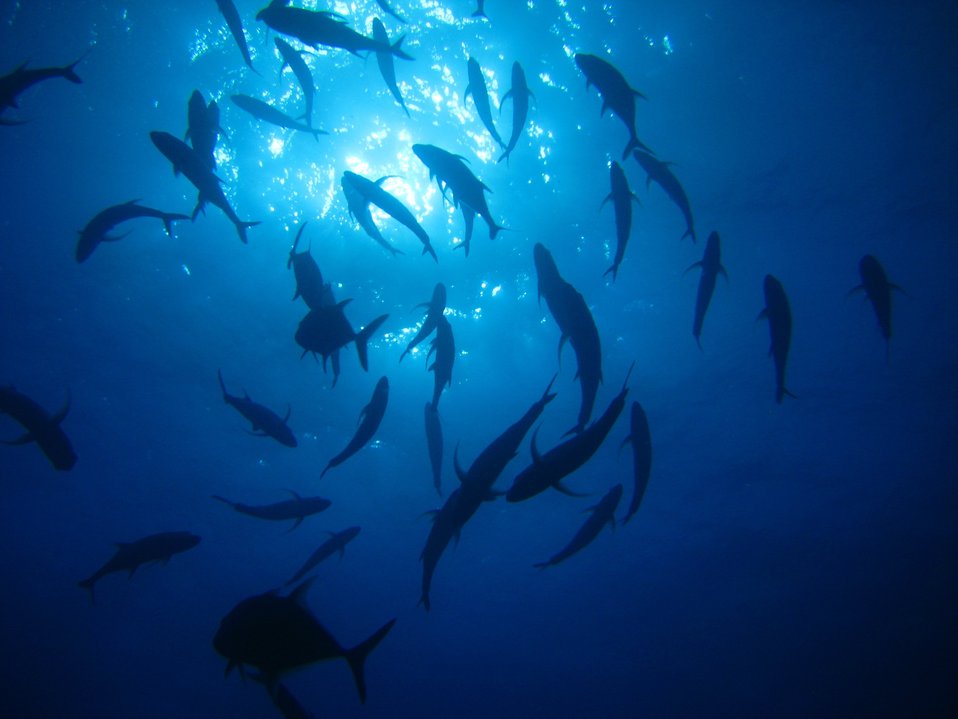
A swirl of ulua (giant trevally) Caranx ignobilis illuminated by sparkles of sunlight